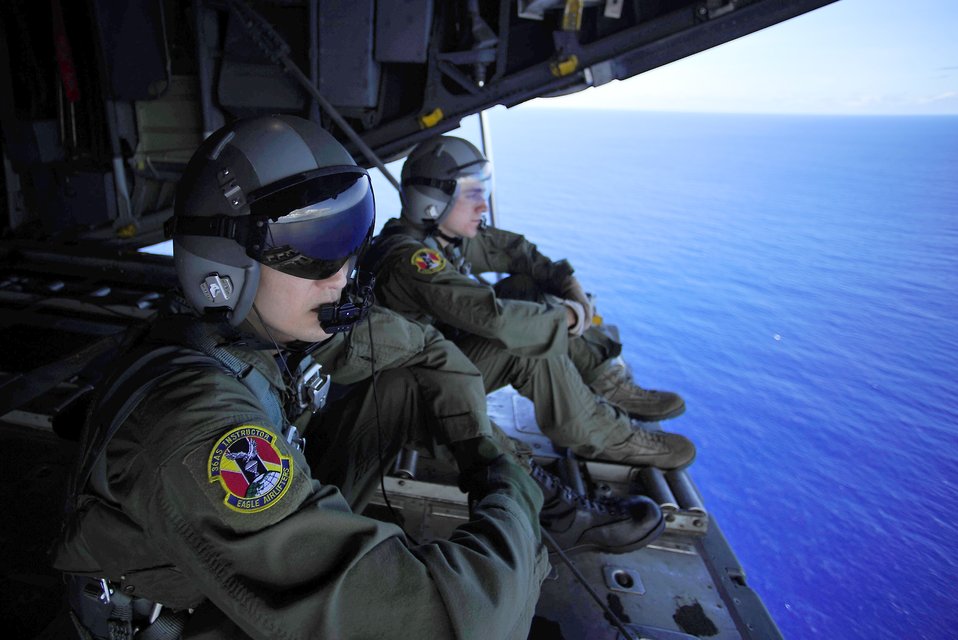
Cope North

Staff Sgt. Keo Khamonel and Staff Sgt. Stewart Guethlein admire the view from the back of a C-130 Hercules Feb. 23, 2011, over Tumon Bay, near Guam, during exercise Cope North. Sergeants Guthlein and Khamonel are loadmasters from the 36th Airlift Squadron at Yokota Air Base, Japan.